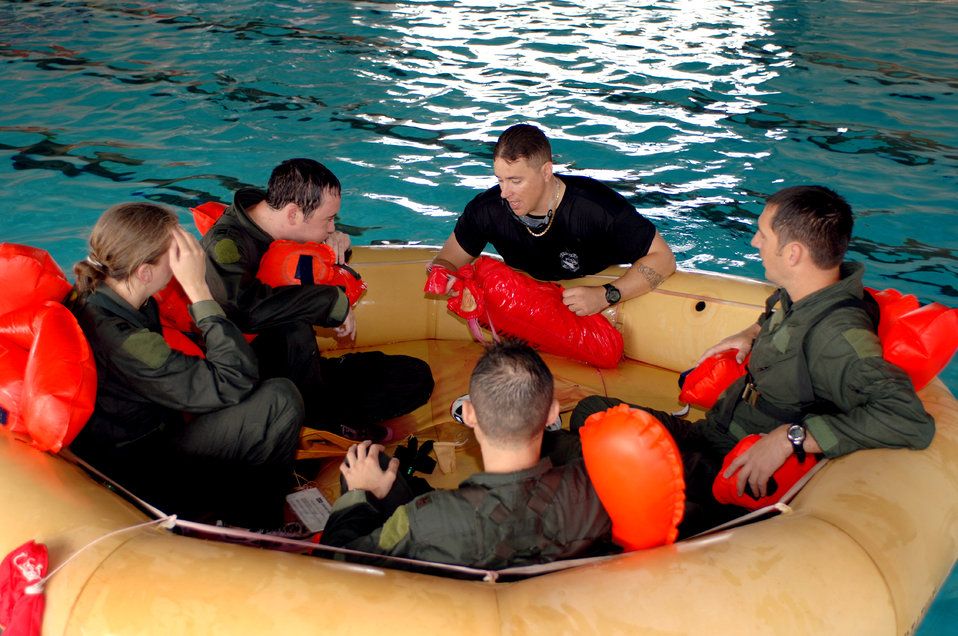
SERE-us business

Tech. Sgt. Teddy Allison instructs 71st Rescue Squadron aircrew members on the assembly of a life-raft cover during water survival training at Moody Air Force Base, Ga., on Friday, May 5, 2006. In the case of an aircraft emergency over water, the cover provides protection from wind and rain and acts as a signaling device because of its bright color. Sergeant Allison is a survival, evasion, resistance and escape instructor with the 347th Operations Support Squadron.